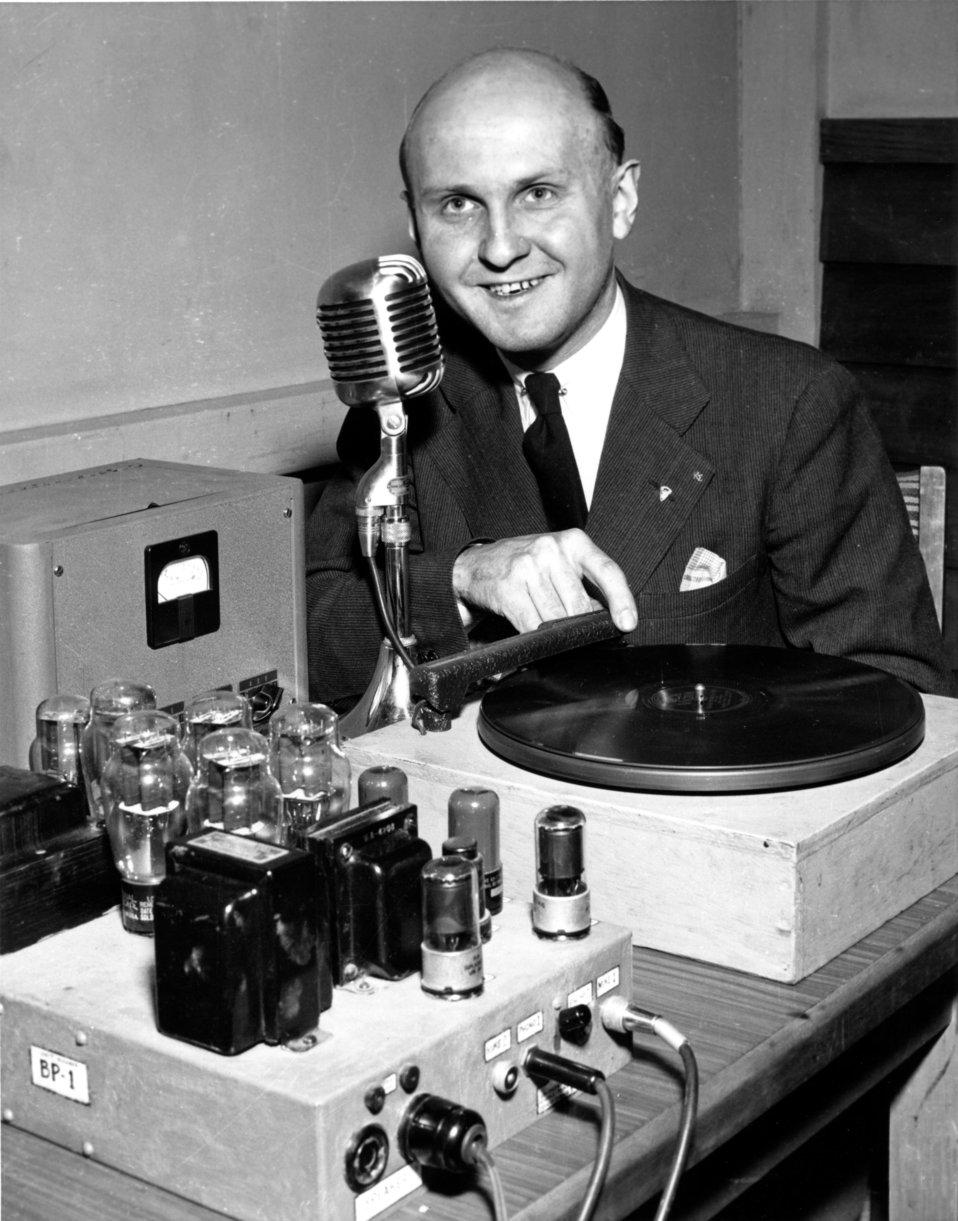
Business activity at Oak Ridge